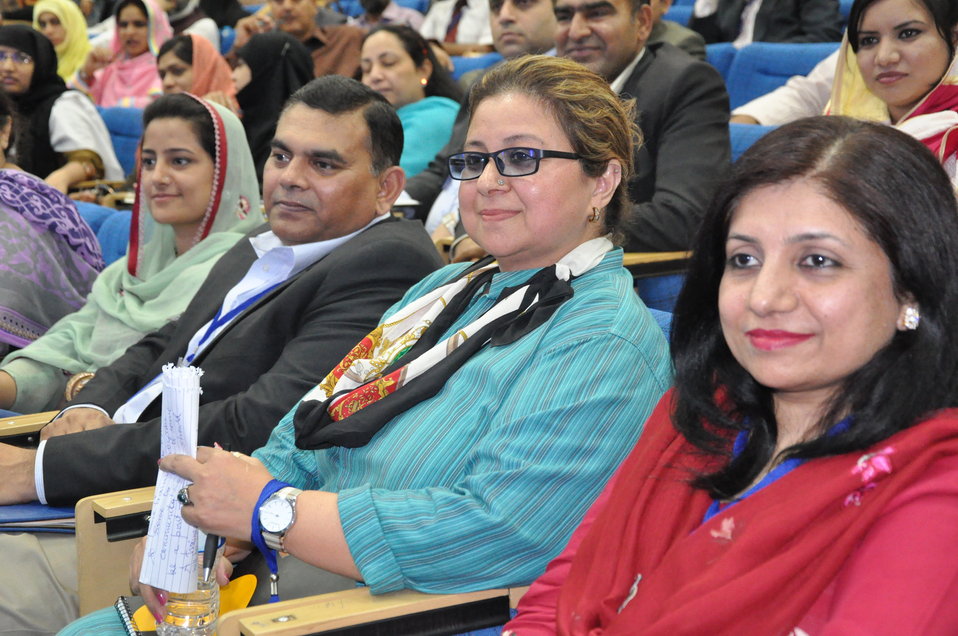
Conference participants